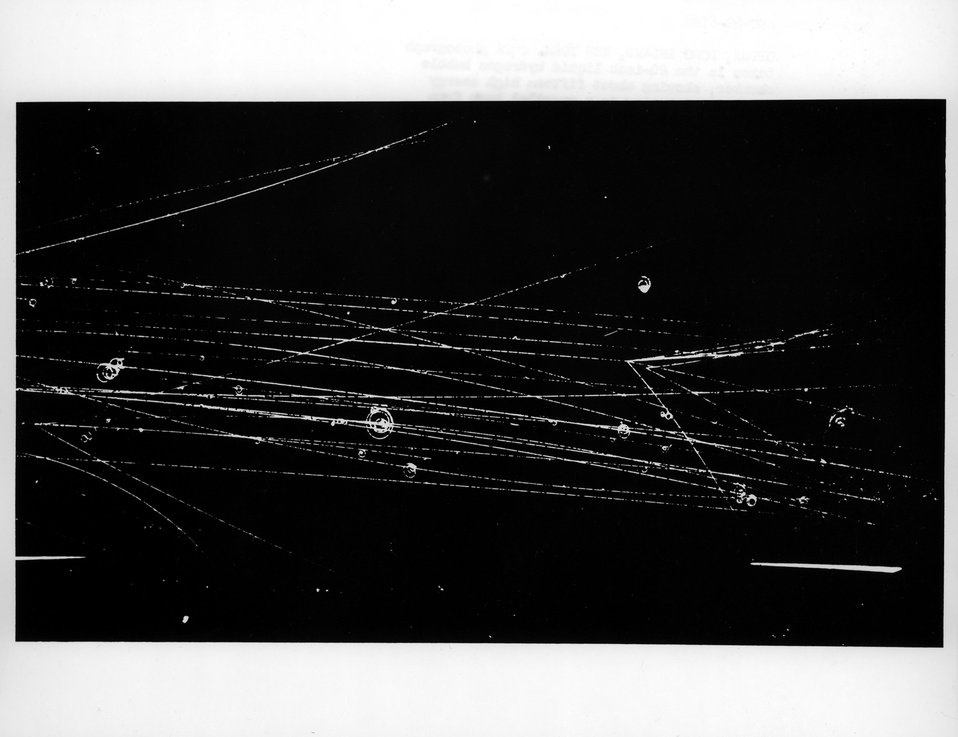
A photograph taken in the 20-inch liquid hydrogen bubble chamber, showing about
fifteen high energy pi-mesons entering in a parallel beam from the left.